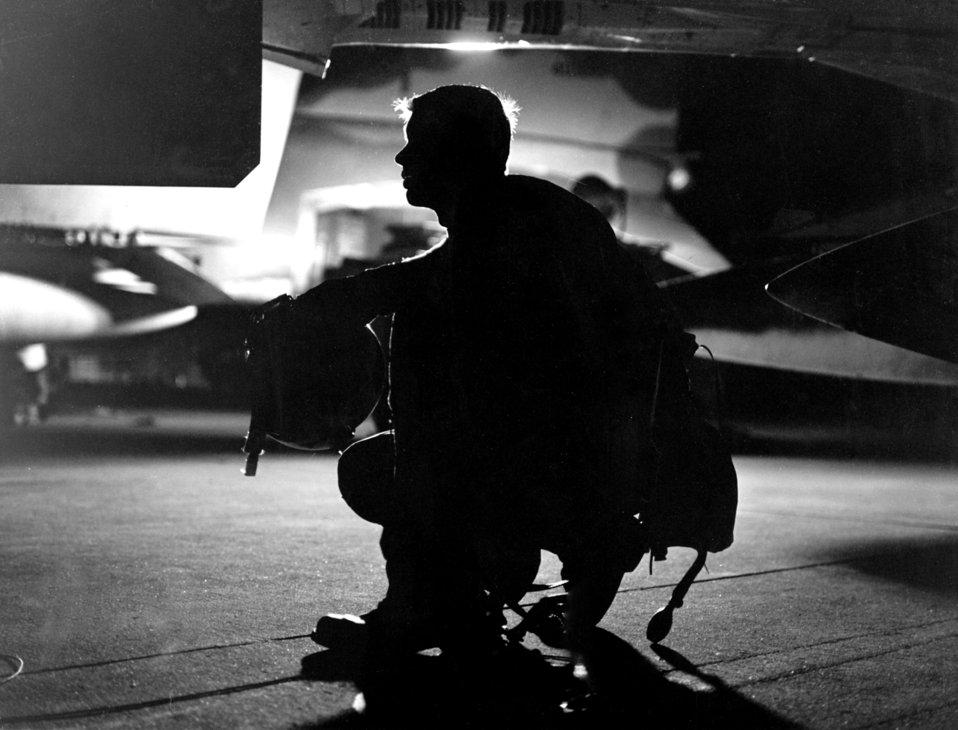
Night flying in F-4C Phantom

1960s -- Night flying is a regular part of any Air Force fighter pilot's life in South Vietnam. First Lt. Robert W. Wickman, 25, of Bellevue, Wash., checks the underside of his F-4C Phantom jet prior to takeoff, Jan. 17, 1967.